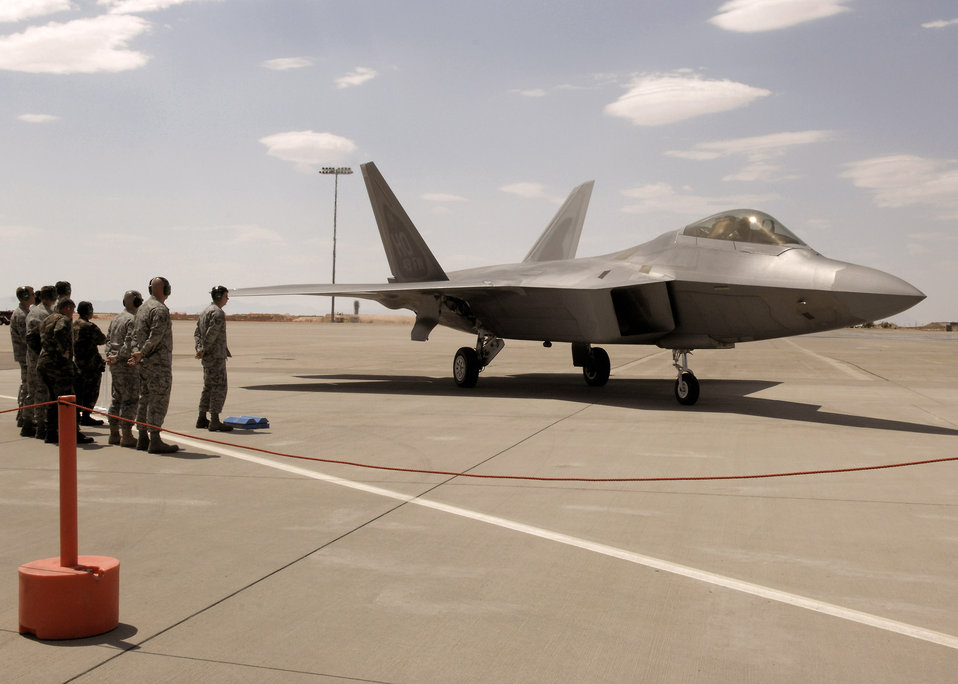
Raptors arrive at Holloman

Flightline personnel wait to perform shutdown checks June 2 for an F-22 Raptor arriving at Holloman Air Force Base, N.M. The aircraft is one of the first F-22s now assigned to the base to arrive.